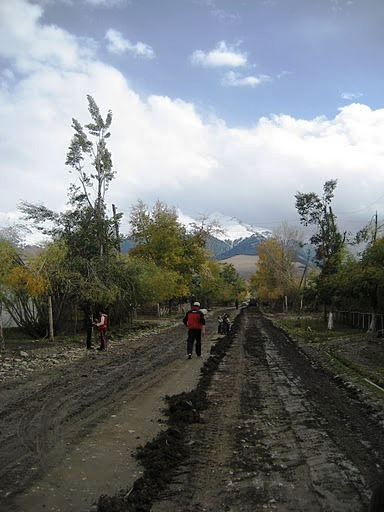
U.S. Embassy Bishkek Officers Travel Kyrgyzstan To Observe Elections

Foreign Service Officers from U.S. Embassy Bishkek travel Kyrgyzstan to observe polling stations and monitor the political and security situation in Kyrgyzstan in October 2010.